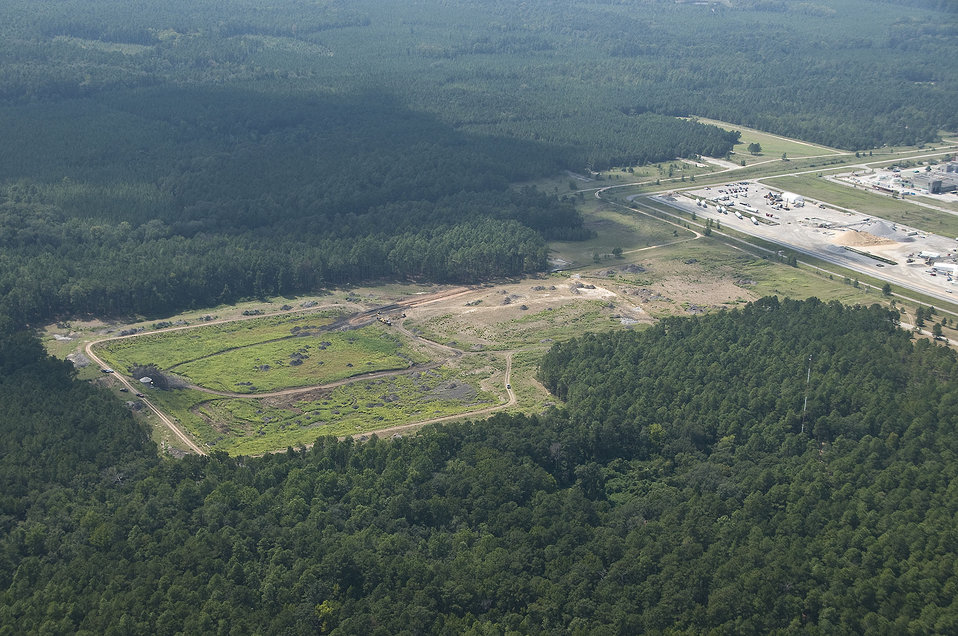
September 2010: P Ash Basin - Before

At the P Area Ash Basin, Recovery Act workers removed about 35 acres of vegetation on and around the 14-acre manmade earthen basin to prepare for remediation. Next, they consolidated ash inside the basin that had spread in the area from former P Area Powerhouse operations, which ended in 1991. Workers then prepared a clean soil and sod cover, and planted seedlings.
The vegetative layer prevents precipitation from infiltrating the basin’s ash residues and entering the groundwater. About 1,500 feet of erosion-control fencing also was installed.